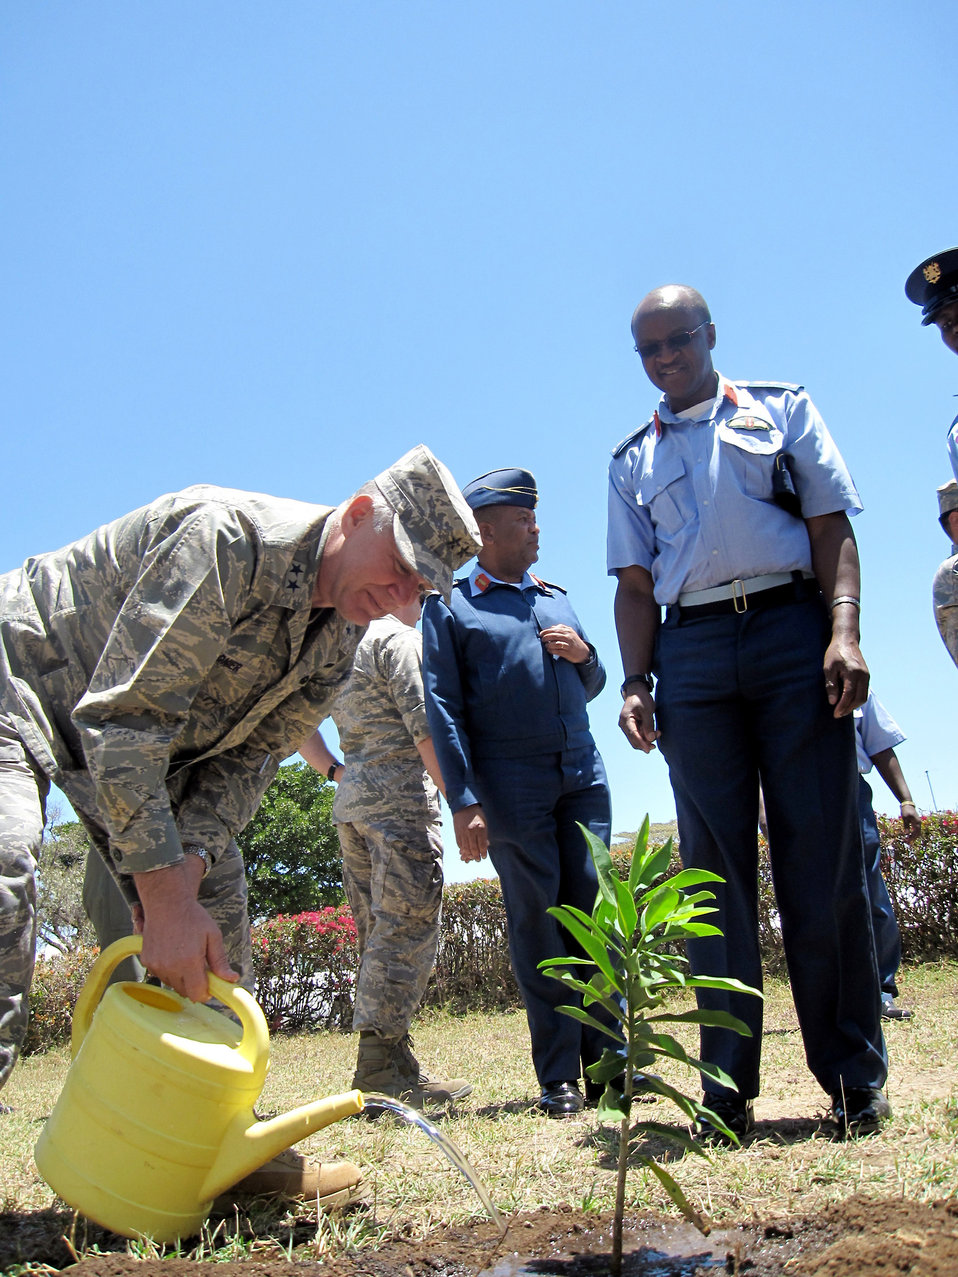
Air Forces Africa commander visits Kenyan air force

Maj. Gen. Ronald R. Ladnier pours water onto a tree during a tree-planting ceremony at Laikipia Air Base, Kenya, Aug. 25. The formation was offered as part of the General's welcome to the base during a senior leader engagement this week. General Ladnier met with senior Kenyan defense officials, including Kenyan air force leadership. The engagement included a discussion on how AFAFRICA, also known as 17th Air Force, can continue to assist Kenya in the evolution of its air force. General Ladnier is commander of Air Forces Africa.